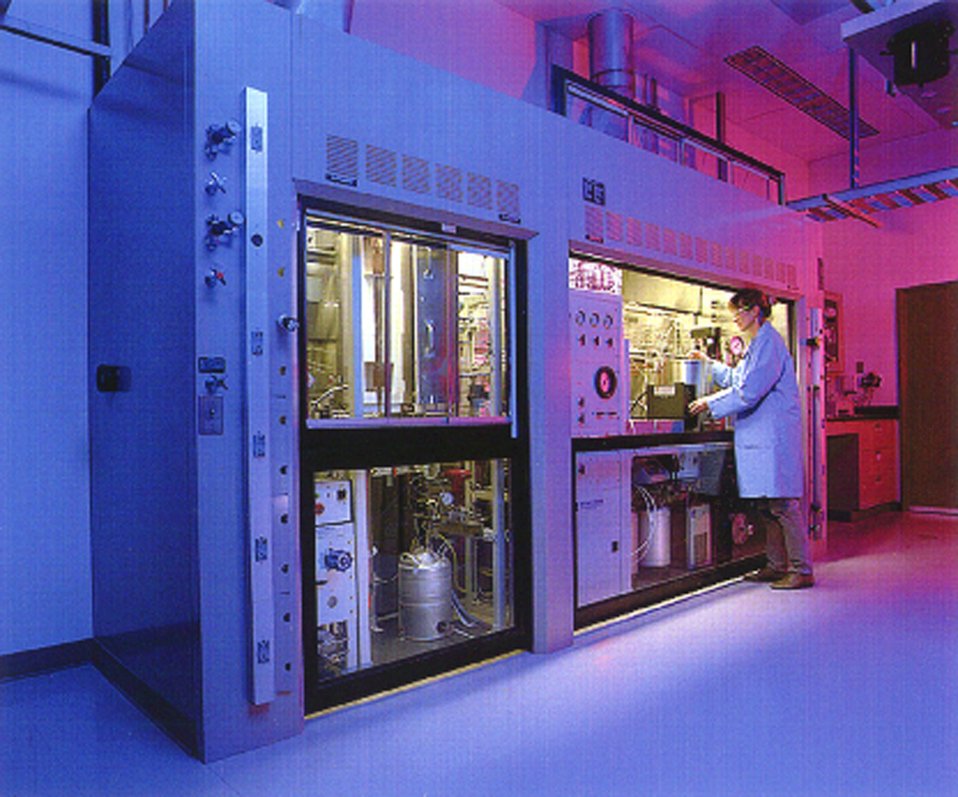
THE CHEMICAL REACTOR TEST STAND (CRTS) AT PNNL'S ENVIRONMENTAL MOLECULAR SCIENCES LABORATORY.

THE CRTS IS USED TO STUDY FUNDAMENTAL CHEMICAL REACTION KINETICS. INFORMATION OBTAINED FROM THESE STUDIES SUBSEQUENTLY COULD BE USED IN THE DESIGN AND DEPLOYMENT OF CHEMICAL REACTORS IN INDUSTRY.